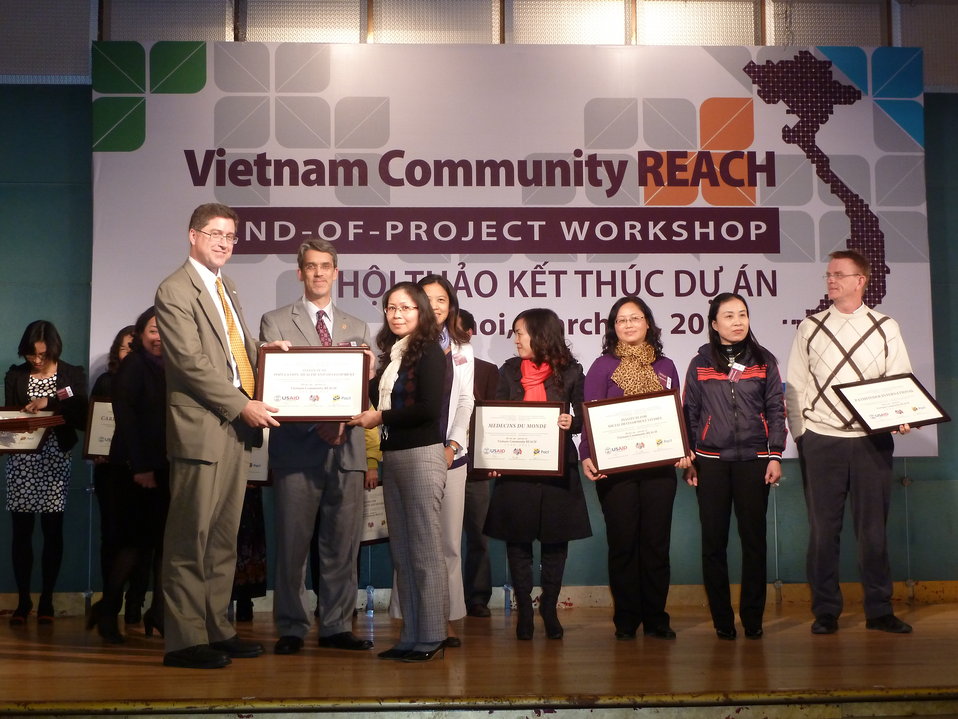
USAID, PEPFAR, and Pact award certificates to local and international partners for their work in addressing HIV in Vietnam

Community REACH project close-out with USAID and implementing partner, Pact